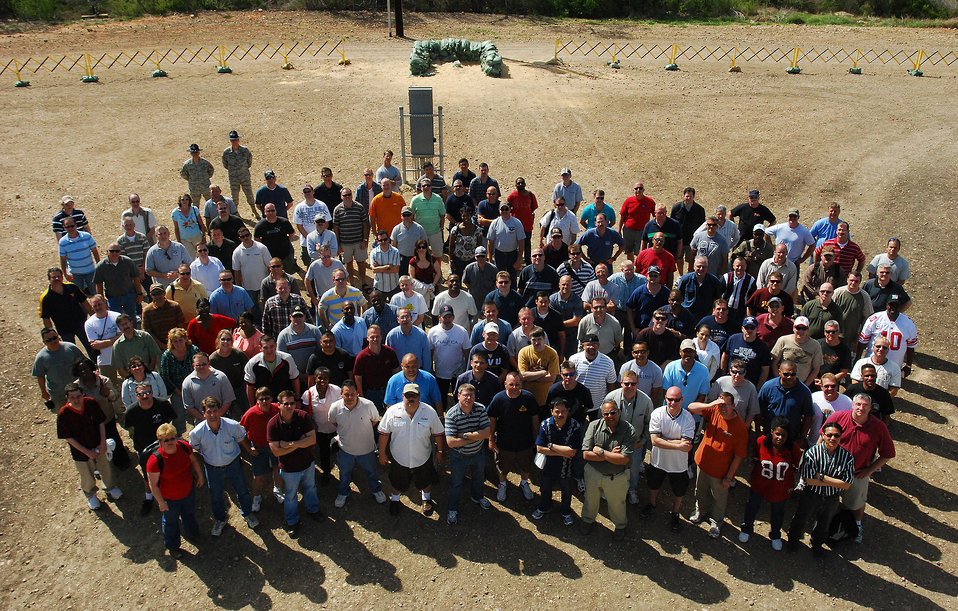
Retired airmen called back to duty

Retired Air Force majors and master sergeants take part in the 2009 Push-Pull exercise at Lackland Air Force Base, Texas. The exercise tested the ability of Air Force officials to recall retired Airmen with specific skills should their expertise be needed in the future.